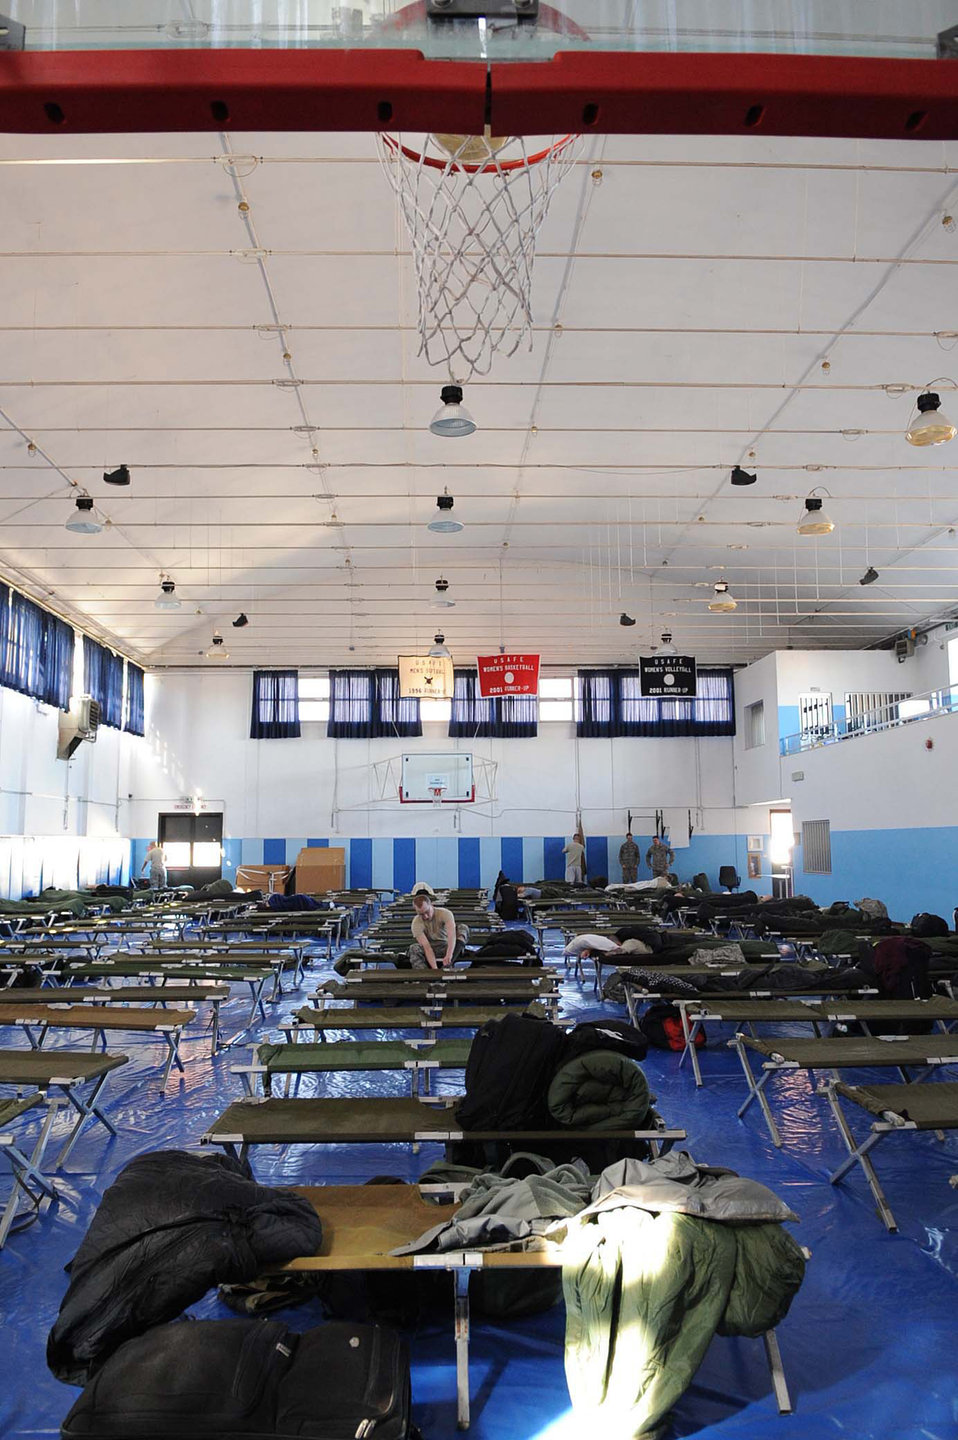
Odyssey Dawn

Servicemembers from the Navy and Air Force deployed to Aviano Air Force Base, Italy, in support of Joint Task Force Odyssey Dawn temporarily reside in the Falcon Fitness Center on March 21, 2011. Joint Task Force Odyssey Dawn is the U.S. Africa Command Task force established to support the larger international response to the unrest in Libya. A broad coalition of nations are partnering to enforce U.N. Security Council Resolution (UNSCR) 1973, which authorizes all necessary means to protect civilians in Libya under threat of attack by Qadhafi regime forces. JTF Odyssey Dawn is commanded by Admiral Samuel J. Locklear, III.